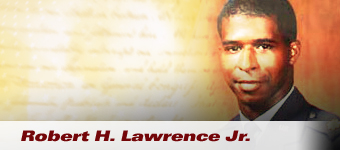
Maj. Robert Lawrence, the first African-American astronaut.